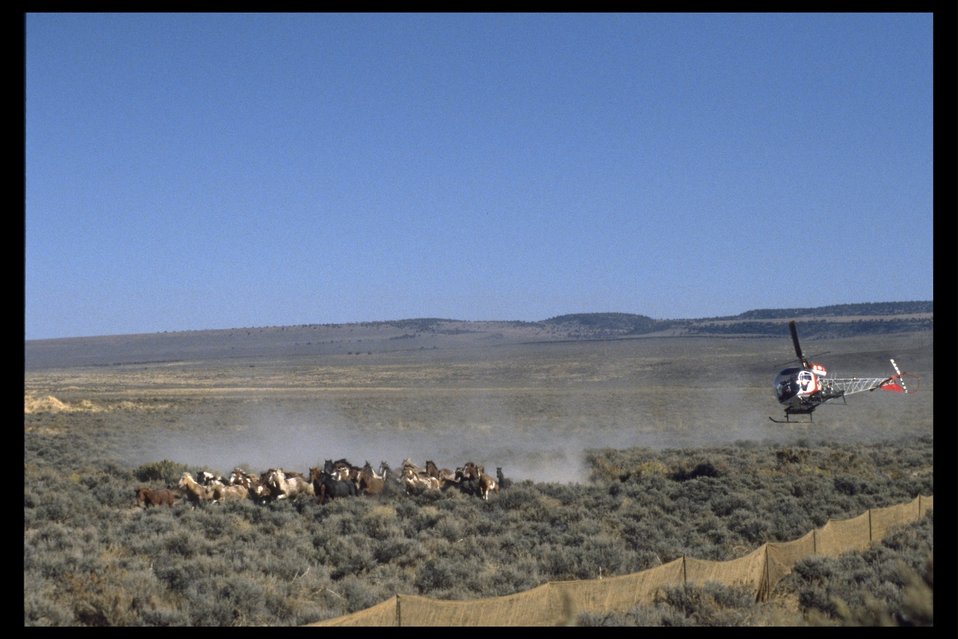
Helicopter driving South Steens wild horses into a trap.